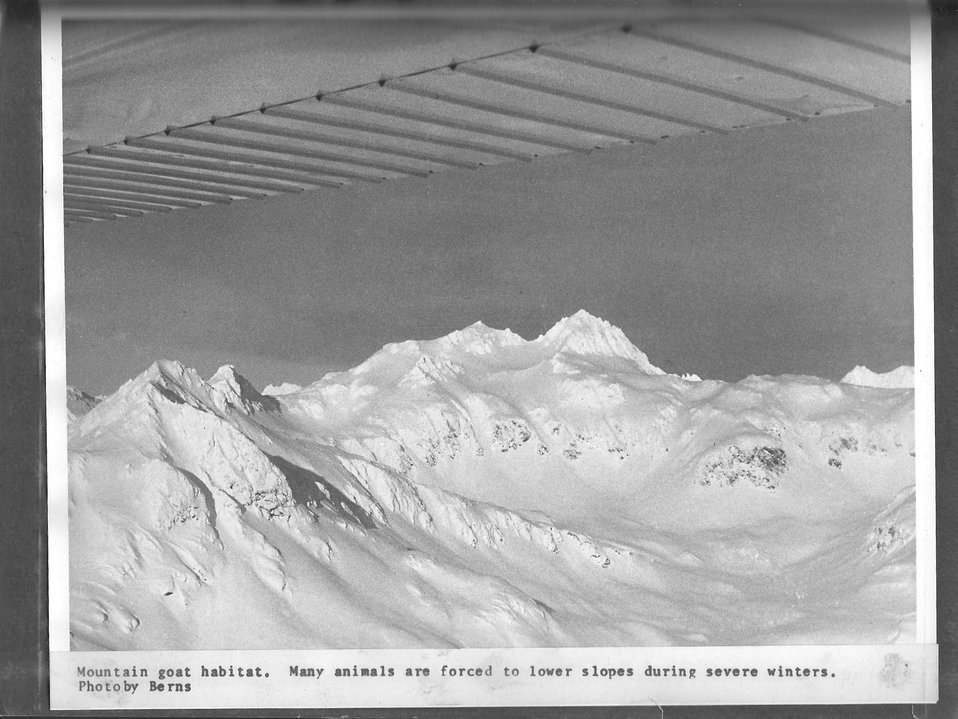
(1968) Mountain Goat Habitat

Credit: USFWS

Source and Contact: Kodiak National Wildlife Refuge